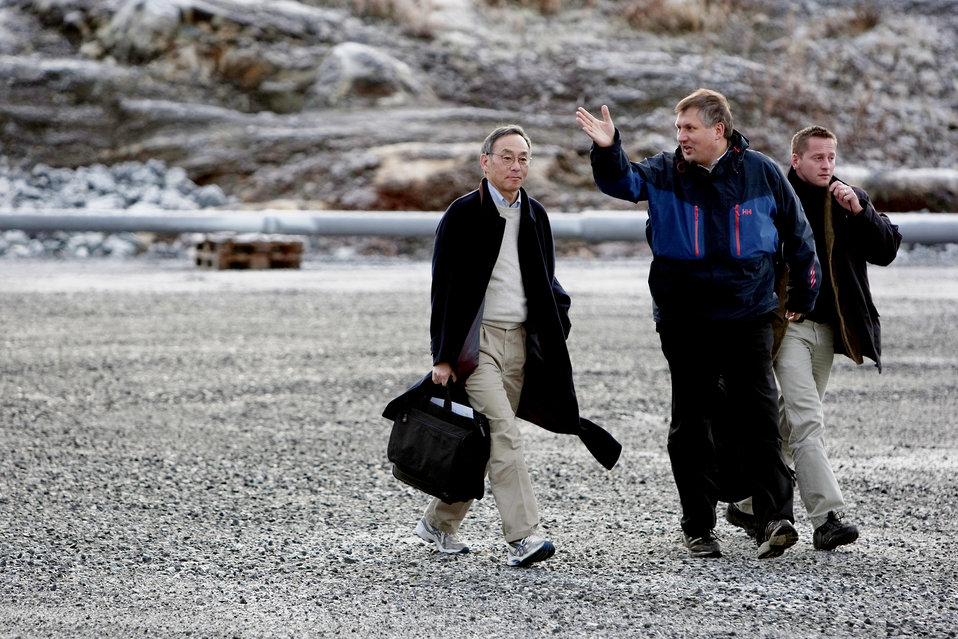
arrival mongstad

MONGSTAD 20091212.
Olje- og energiminister Terje Riis-Johansen (t.h.) og USAs energiminister Stephen Chu ankom med helikopter til Mongstad lørdag.
Foto: Stian Lysberg Solum / Scanpix